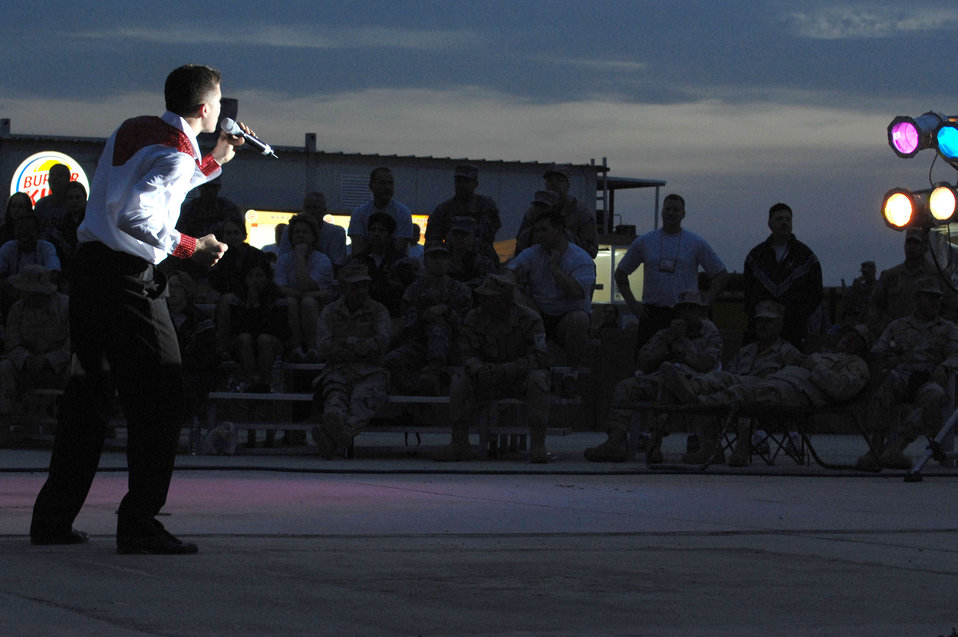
Tops in Blue perform for Airmen in Iraq

A Tops in Blue Airmen sings to Airmen and Soldiers April 26 at Kirkuk Air Base, Iraq. The 30-member group's goal is to enhance mission productivity for Air Force members around the world. Tops in Blue showcases music, dance and comedy -- all performed by active-duty Airmen who perform 90 minutes of non-stop live entertainment.